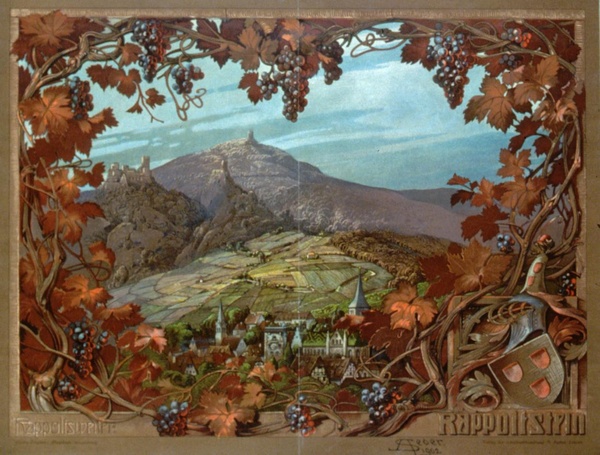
Deutsch: Anton Seder 1902